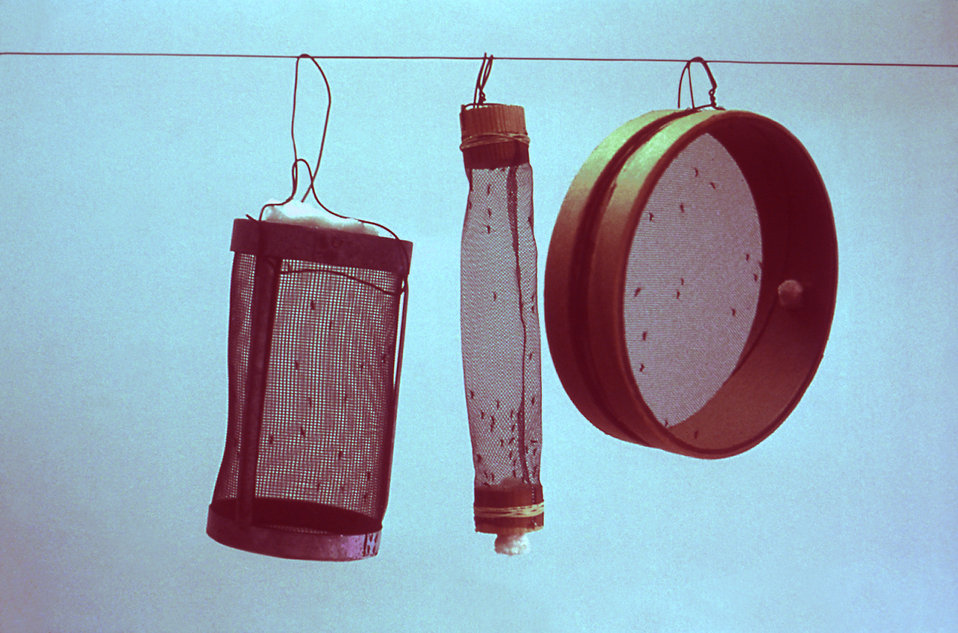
This 1981 photograph depicts three different types of bioassay cages, (from L-R) a 'standard', 'mini', and a 'cardboard ring' configuration, that had been used in field tests in which endemic mosquitoes were collected to be counted, and analyzed by further testing.